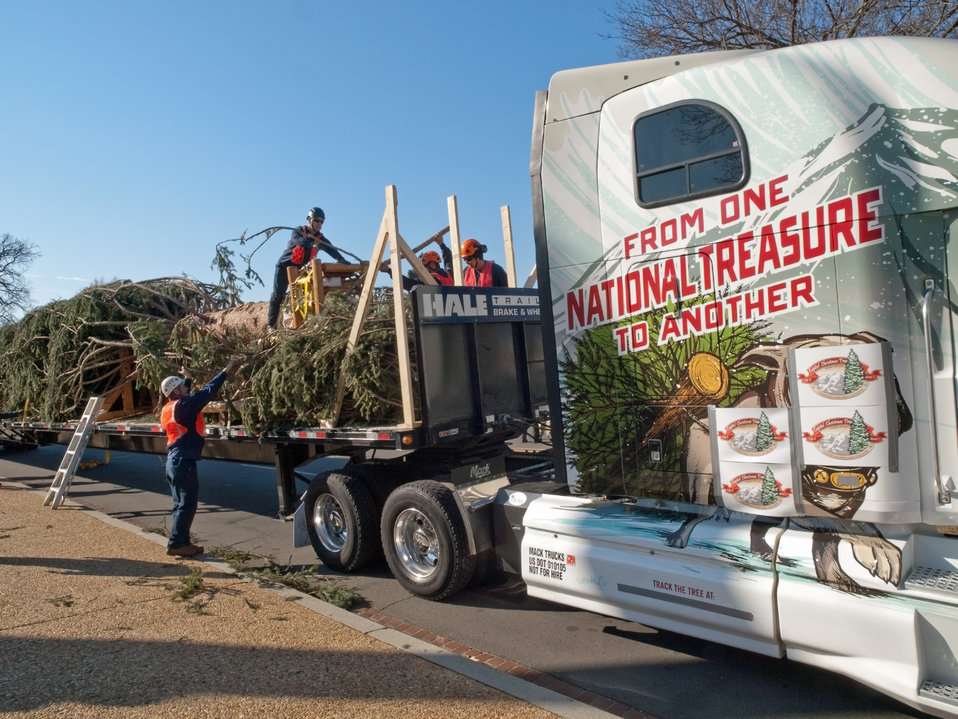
Members of the grounds crew of the Capitol prepare to remove the 2012 Capitol Christmas Tree from its truck after it arrives in Washington, D.C. on Nov.26, 2012. The 73-foot Englemann spruce traveled from the White River National Forest in Colorado.